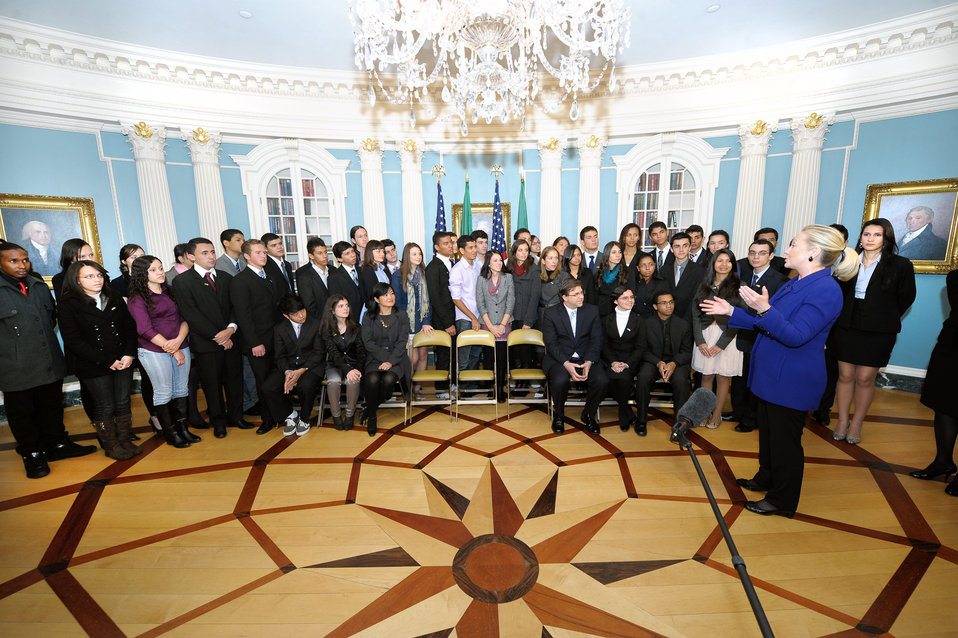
Secretary Clinton Meets With Brazilian Youth

U.S. Secretary of State Hillary Rodham Clinton meets with Brazilian youth participating in the Youth Ambassadors program at the U.S. Department of State in Washington, D.C., on January 25, 2012. The Secretary celebrated the 10th Anniversary of the Youth Ambassadors Program and highlighted the importance of engaging youth worldwide.